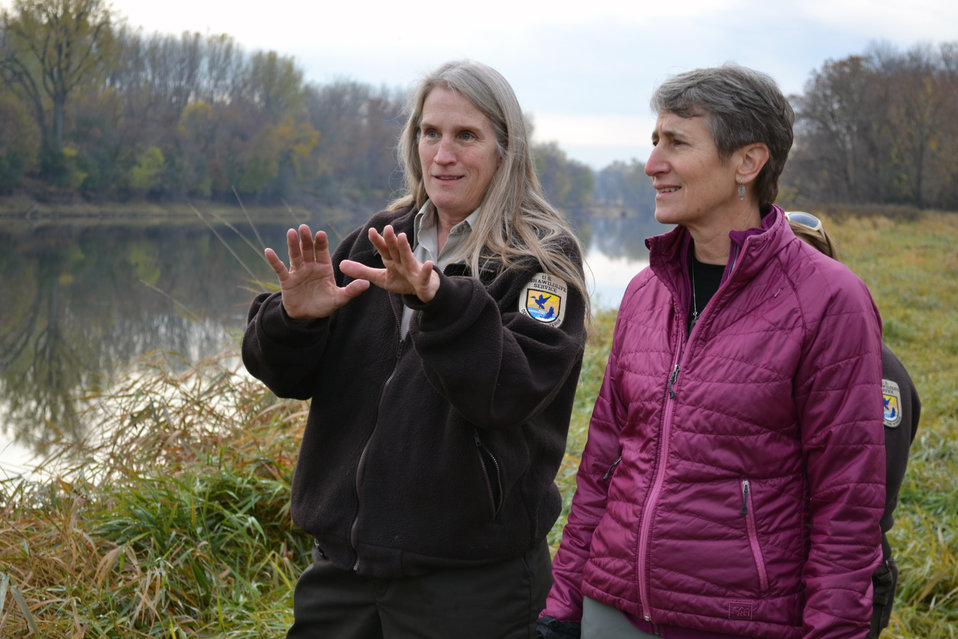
Challenges and Opportunities

Deputy Refuge Manager Jeanne Holler shares her perspective on resource management issues at Minnesota Valley National Wildlife Refuge.